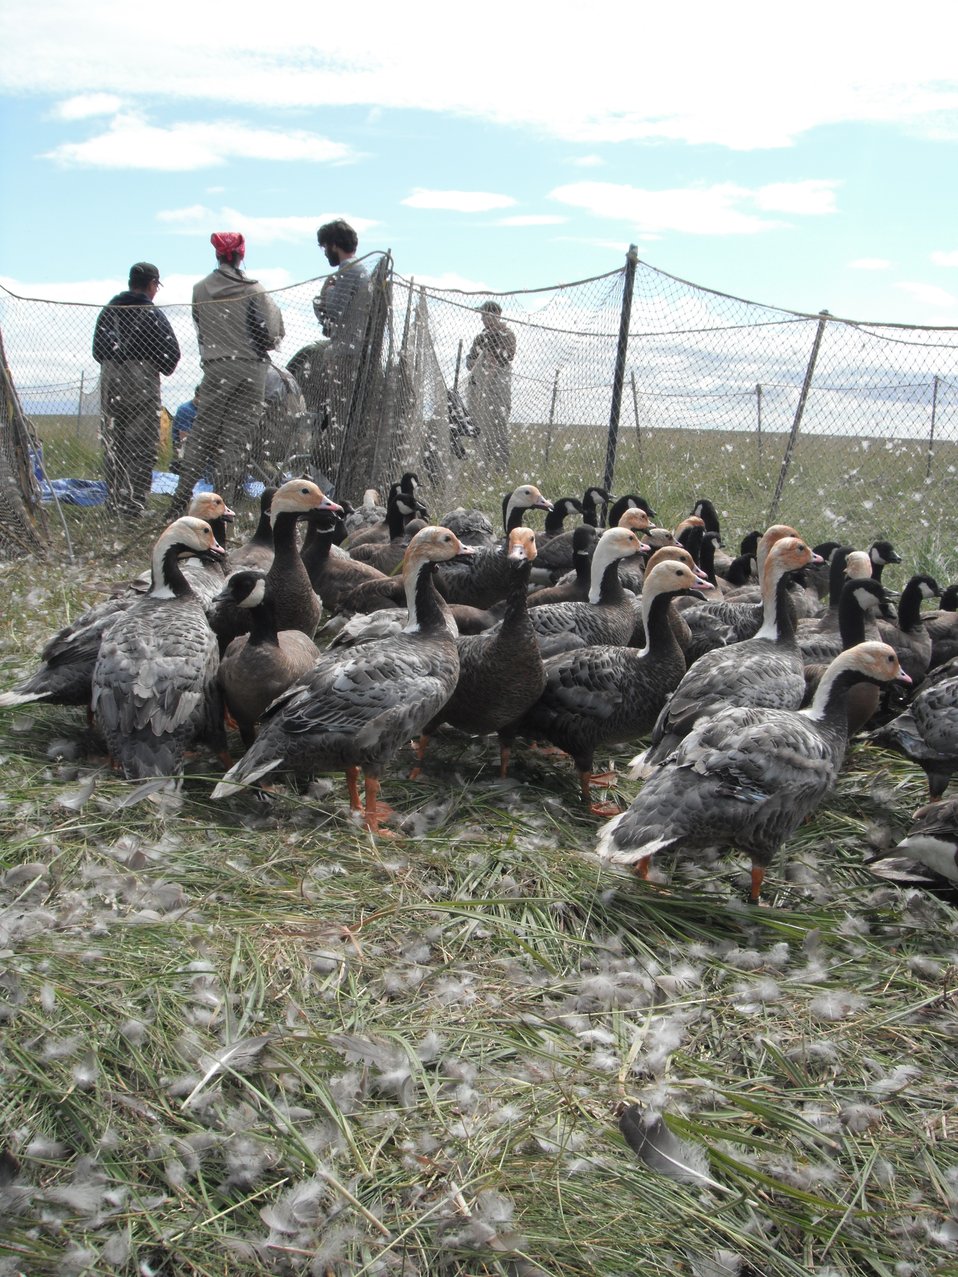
Bycatch

During goose captures it is pretty likely that more than just the target species will be captured.

This banding drive

USFWS Yukon Delta NWR